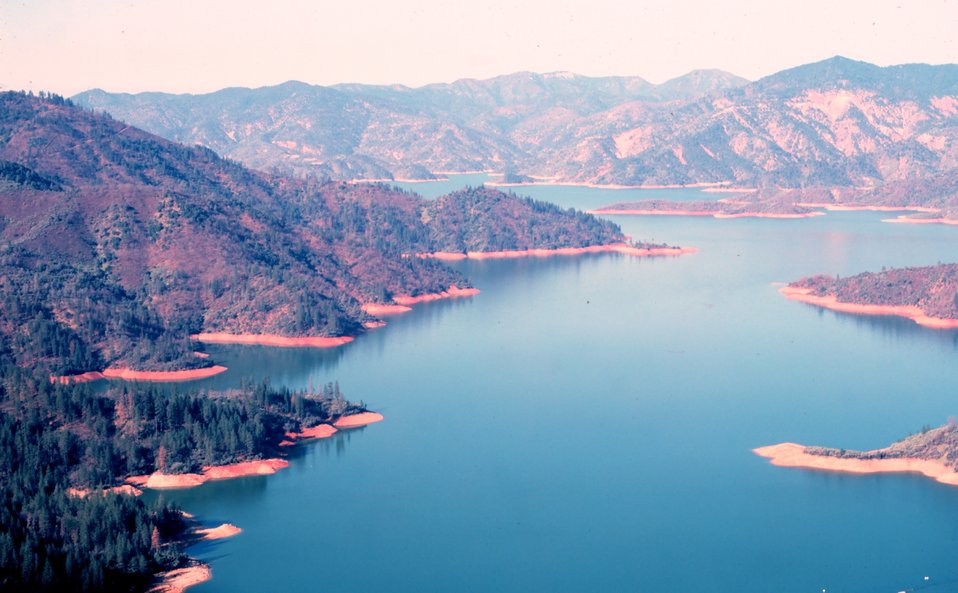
Shasta Reservoir.